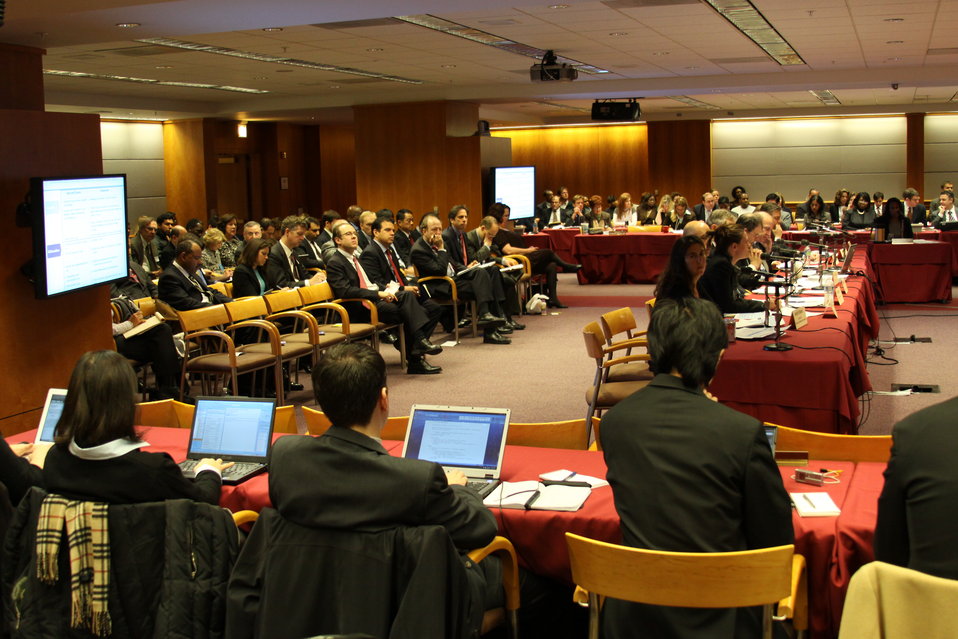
December Commission Meeting